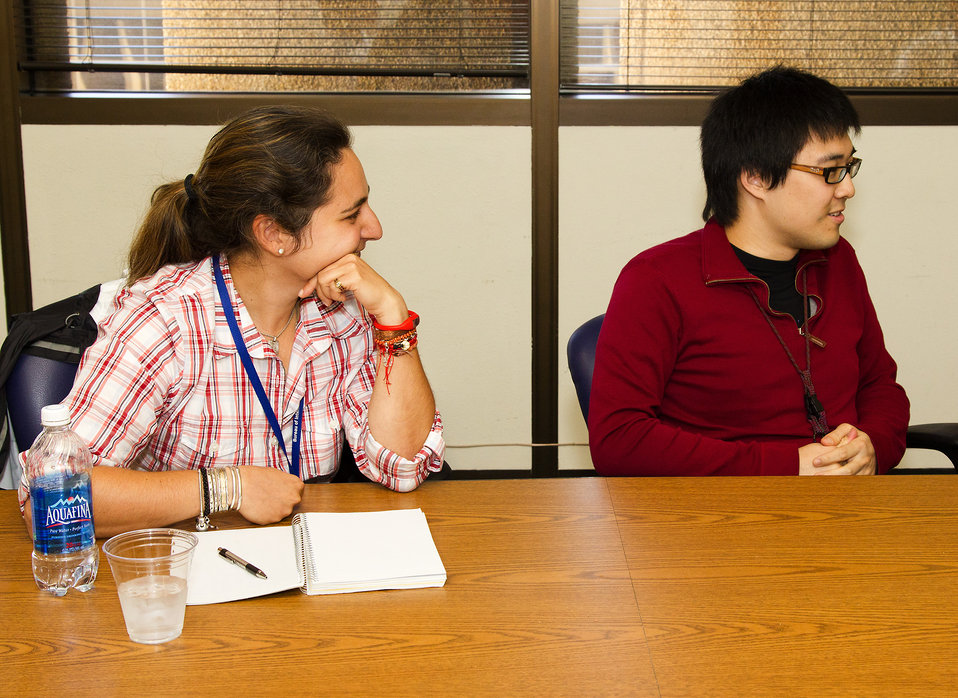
Students Listen to Assistant Secretary Gottemoeller

Zahra S. Kutchesfahani, left, and Peter S. Hong, right, listen to Assistant Secretary of State for Arms Control, Verification and Compliance Rose Gottemoeller at Los Alamos National Laboratory in New Mexico on August 19, 2011.